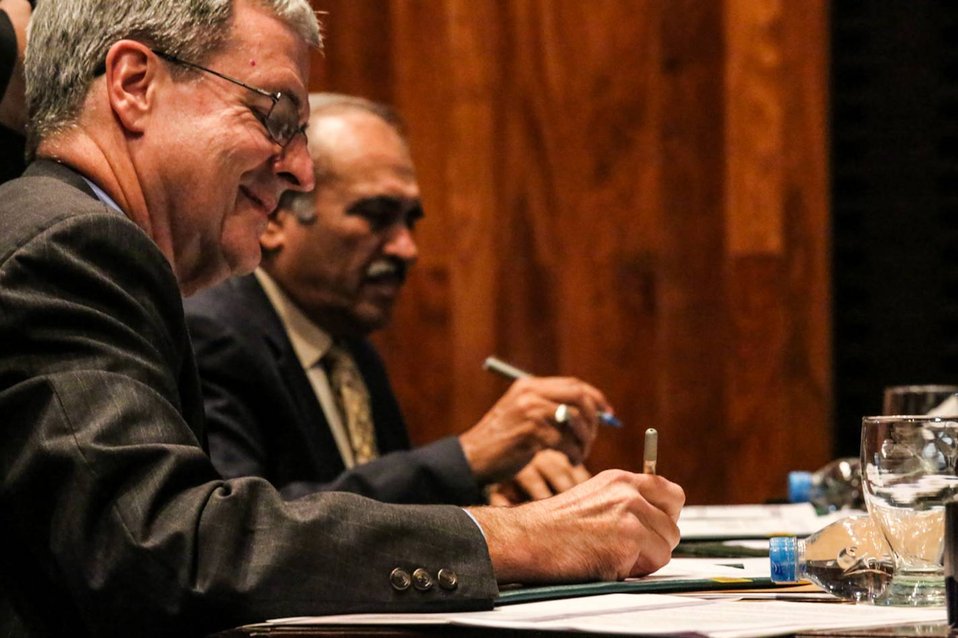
Islamabad, September 12, 2012 - Project Launch Ceremony of Waran Canal Irrigation System